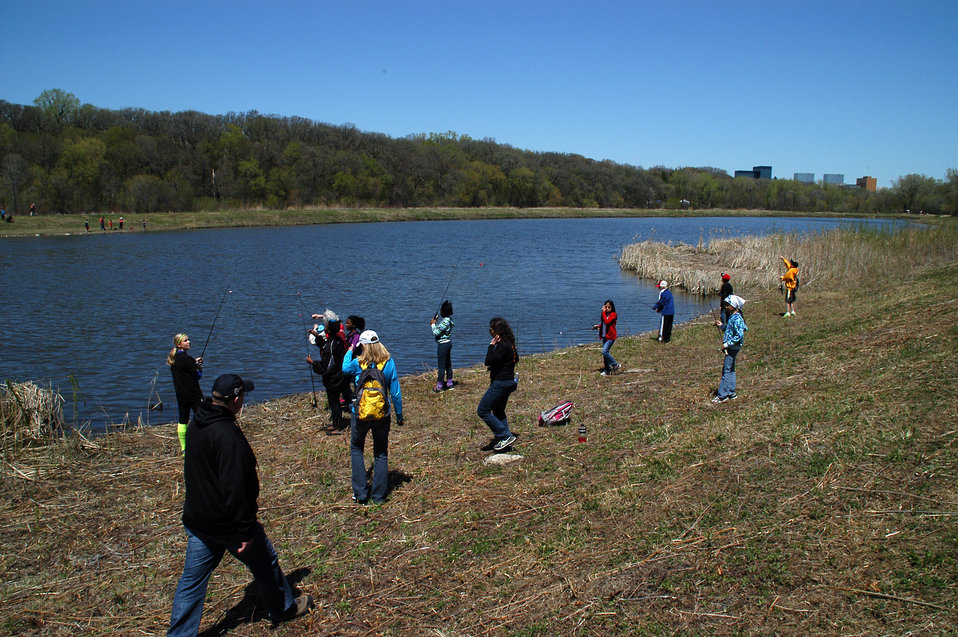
Open Fishing

Students learn to cast and practice their fishing skills at the Bass ponds.